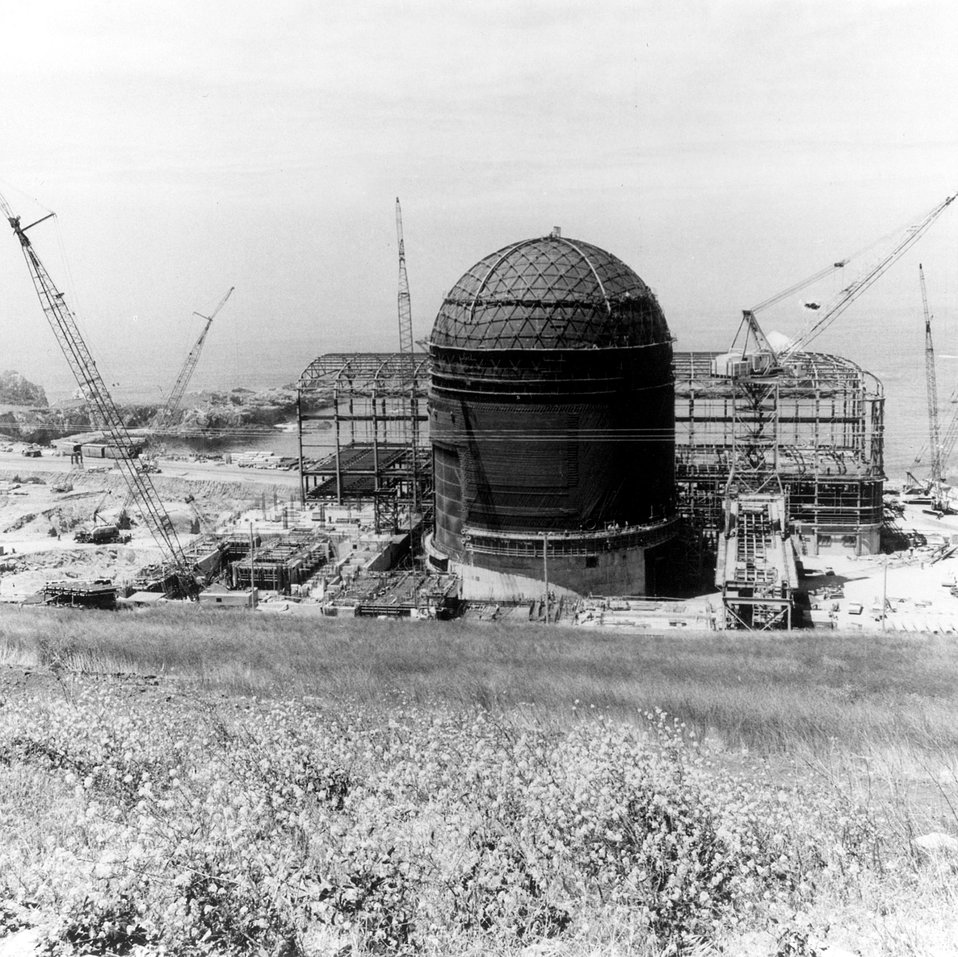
Construction of Pacific Gas & Electric Company's first 1,060-kilowatt nuclear generating facility continues in San Luis Obispo County. Circa 1973.